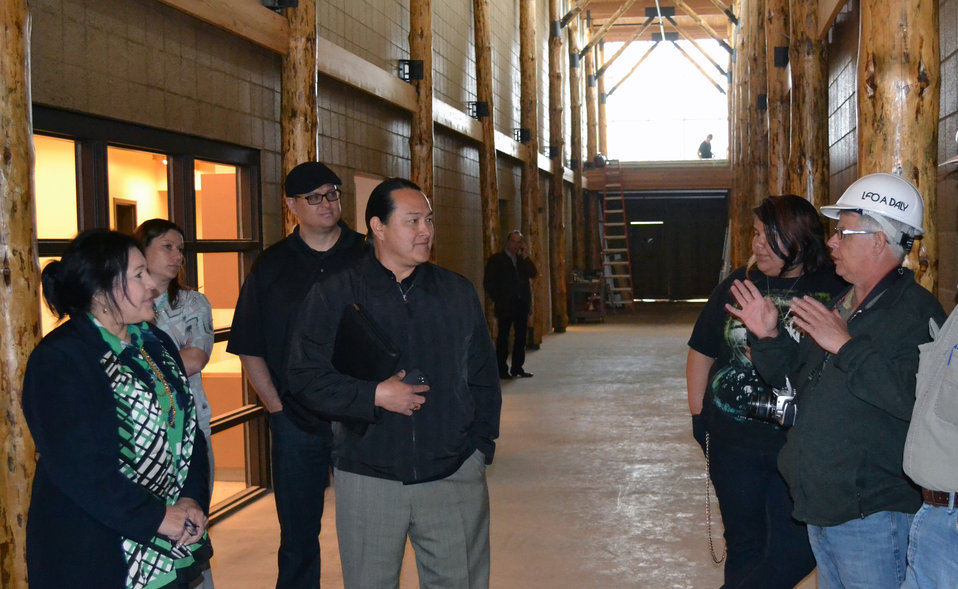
U.S. Department of Agriculture (USDA) Rural Development (RD) Rural Housing Service (RUS) Administrator Tammye Travino visits South Dakota to co-chair a StrikeForce meeting in Sissetion, SD. Travino attended a Housing Fair and visited homes and facilities financed by USDA's RD as part of National Homeownership Month on Monday, Jun. 3, 2013.